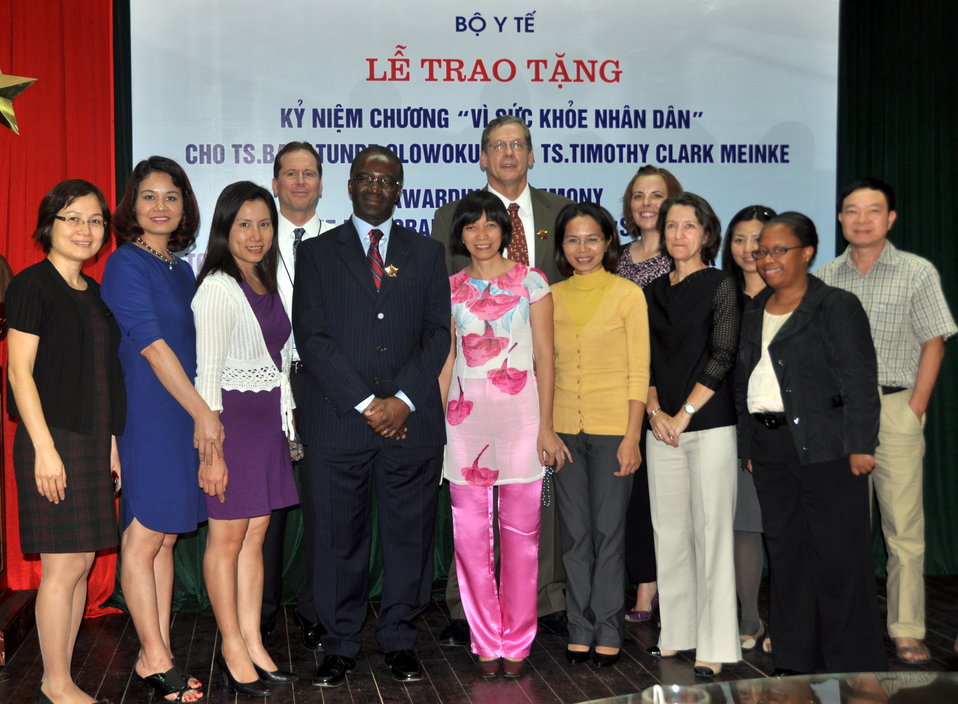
Ministry of Health awards Dr. Timothy Meinke of USAID the ‘Memorabilia for People’s Health’

Hanoi, October 28, 2013.